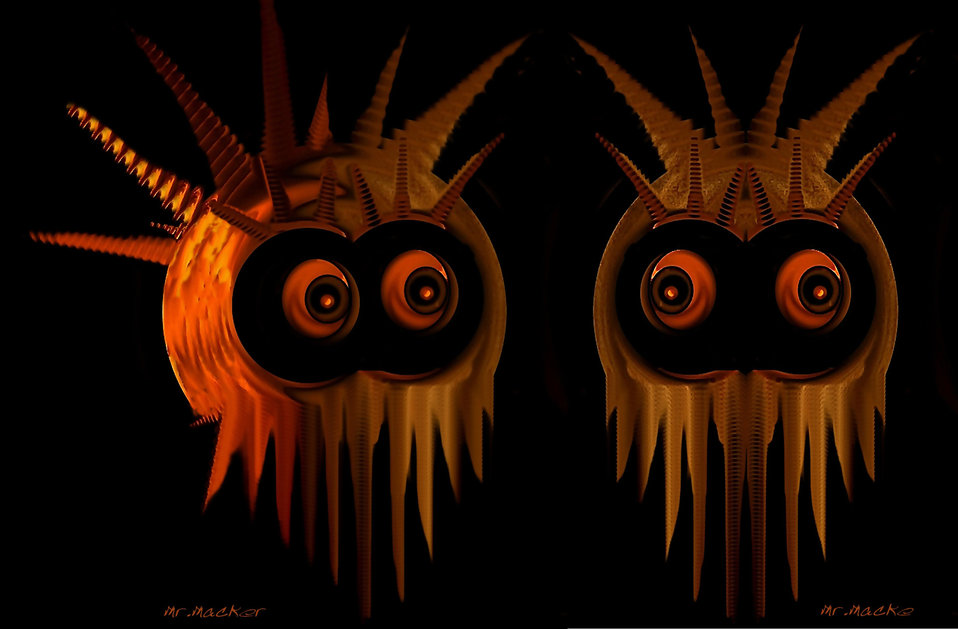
Mr.macker & mr.macke

Comic jellyfish.